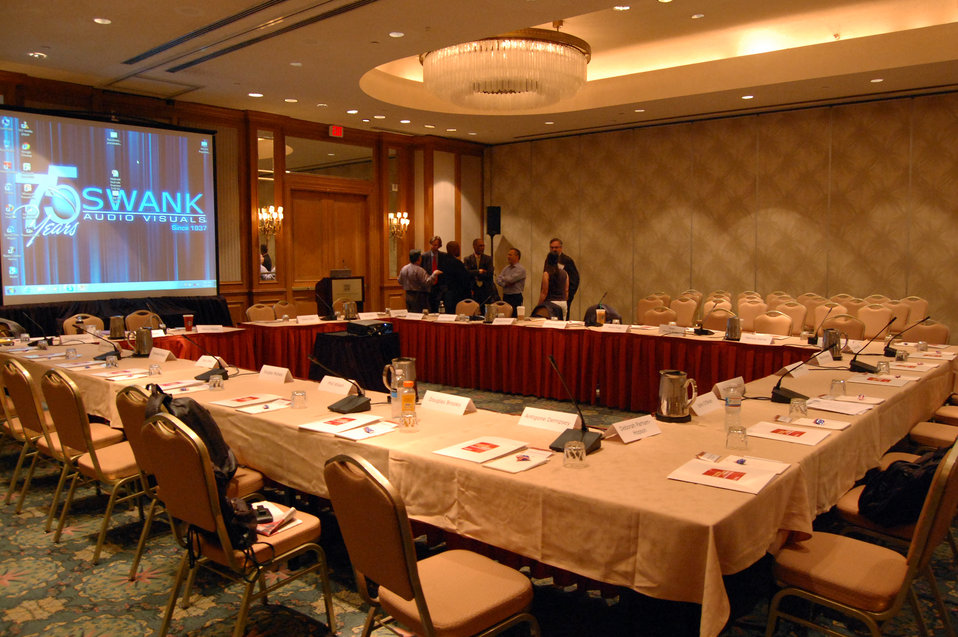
PACHA conf013